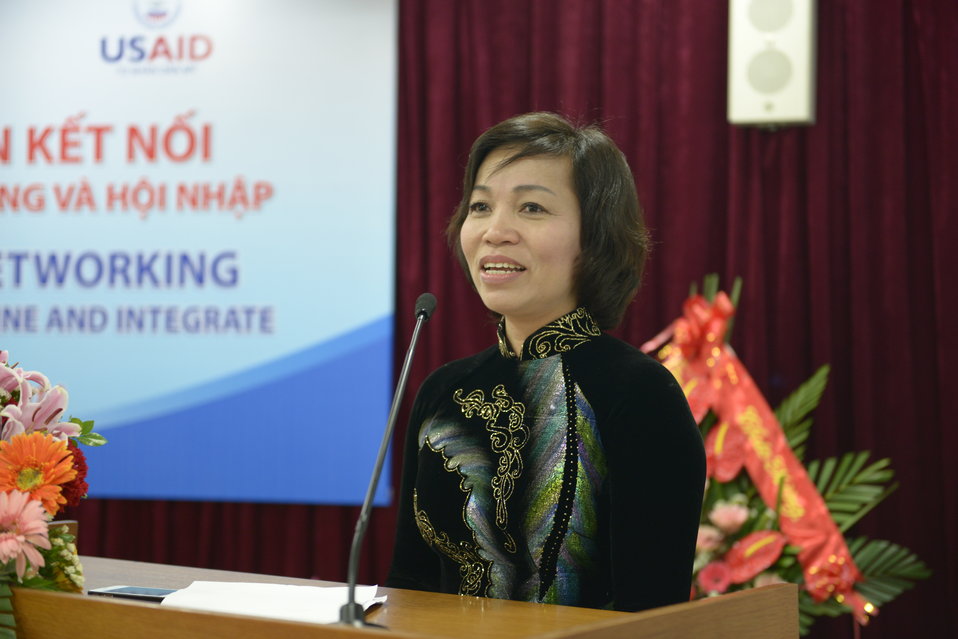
International Women's Day Seminar for female entrepreneurs

Phu Tho, Vietnam. March 1, 2014.